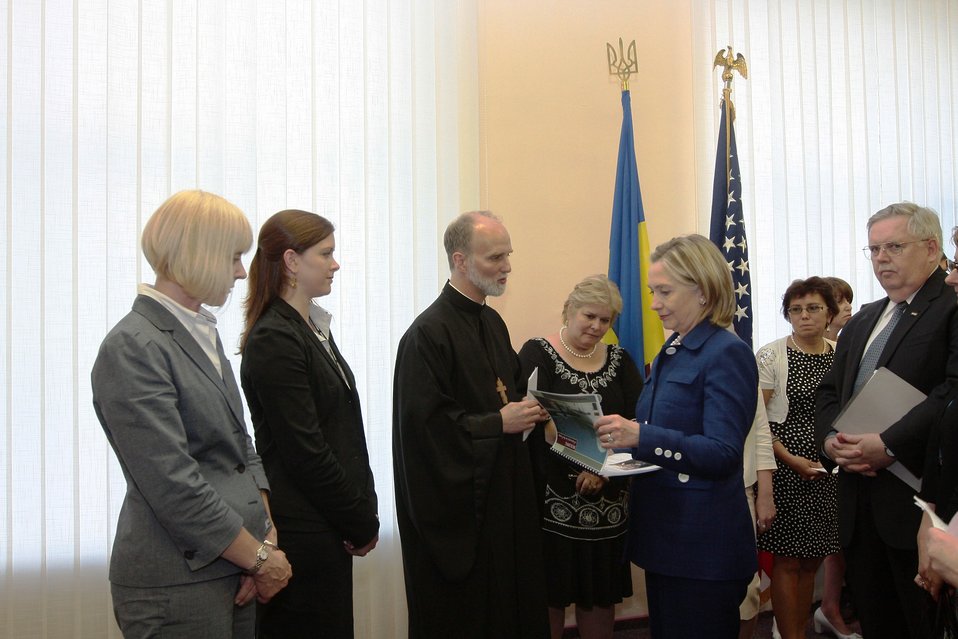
Secretary Clinton Meets With Members of Civil Society and NGO Representatives in Ukraine

U.S. Secretary of State Hillary Rodham Clinton meets with Ukrainian members of civil society and NGO representatives in Kyiv, Ukraine, on July 2, 2010.